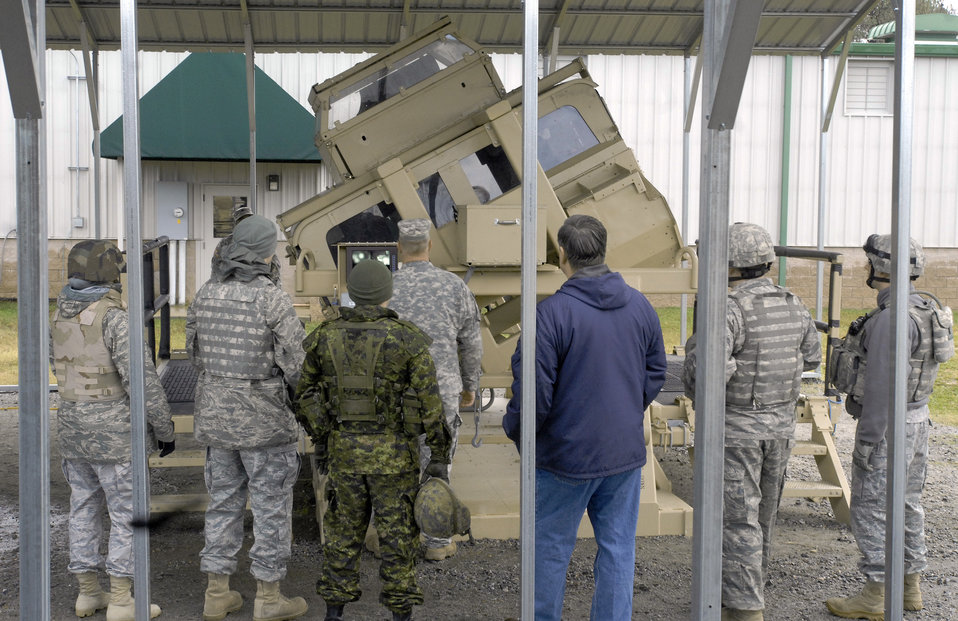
Patriot exercise teaches ISR skills to enhance situational awareness

Students and instructors observe fellow trainees withstand 45-, 90- and 180-degree simulated rollovers in a Humvee body connected to a motorized rotating system here Dec. 10, 2009, at Fort Pickett, Va.
The training was part of Patriot 7, a week-long exercise using intelligence, surveillance and reconnaissance to support irregular warfare missions. Students also participated in a variety of training to include Humvee egress assistance training and a convoy mission exercise.